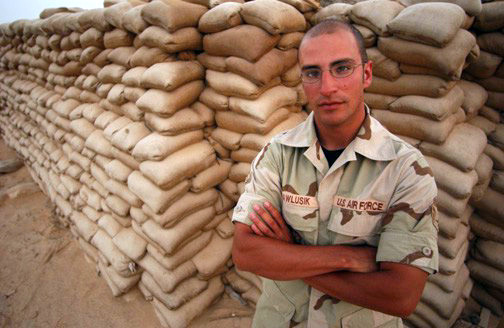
Pawlusik

OPERATION IRAQI FREEDOM -- Airman 1st Class Matt Pawlusik, a third-country-national escort for the 405th Air Expeditionary Wing, is a first-time participant in the MTV reality series